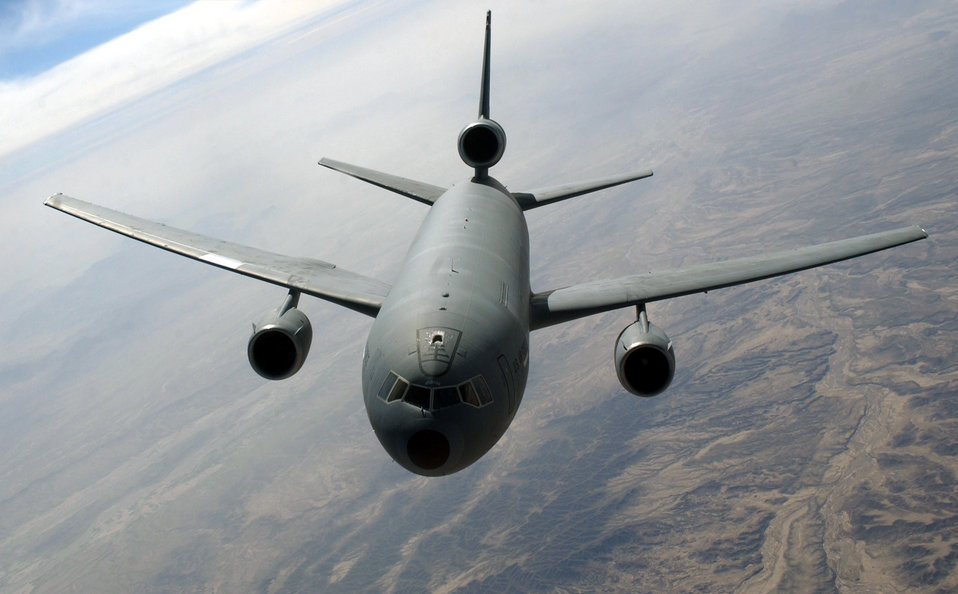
Extender refueled

OPERATION ENDURING FREEDOM -- A KC-10 from McGuire AFB, N.J. resumes its flight pattern after receiving fuel from a KC-135 Stratotanker over Afghanistan March 17. The KC-135 crew, from the 931st Air Refueling Group, McConnell Air Force Base, Kan., is currently assigned to the 405th Air Expeditionary Wing, in support of Operation Enduring Freedom.